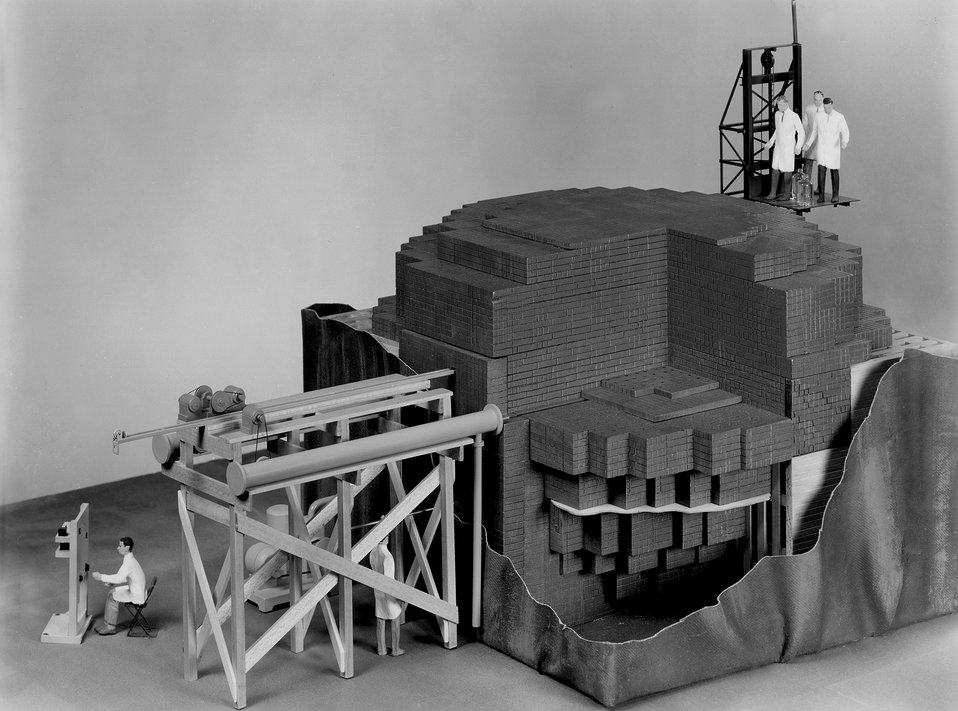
Closeup of scale model (1/2 in. = 1 ft.) of CP-1 reactor temporarily removed from its West Stands racquets court environment..